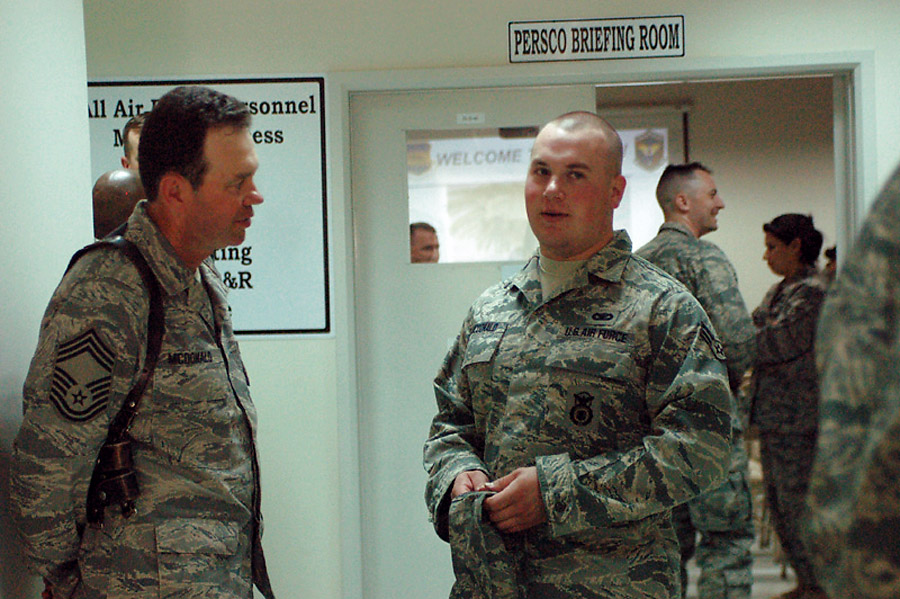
Brothers in arms, family by blood

Chief Master Sgt. Earl McDonald speaks with his eldest son, Airman 1st Class Phil McDonald, March 13 upon his arrival to Sather Air Base, Iraq. Chief McDonald is the 447th Expeditionary Civil Engineer Squadron superintendent, and Airman McDonald is assigned to the 447th Expeditionary Security Forces Squadron.